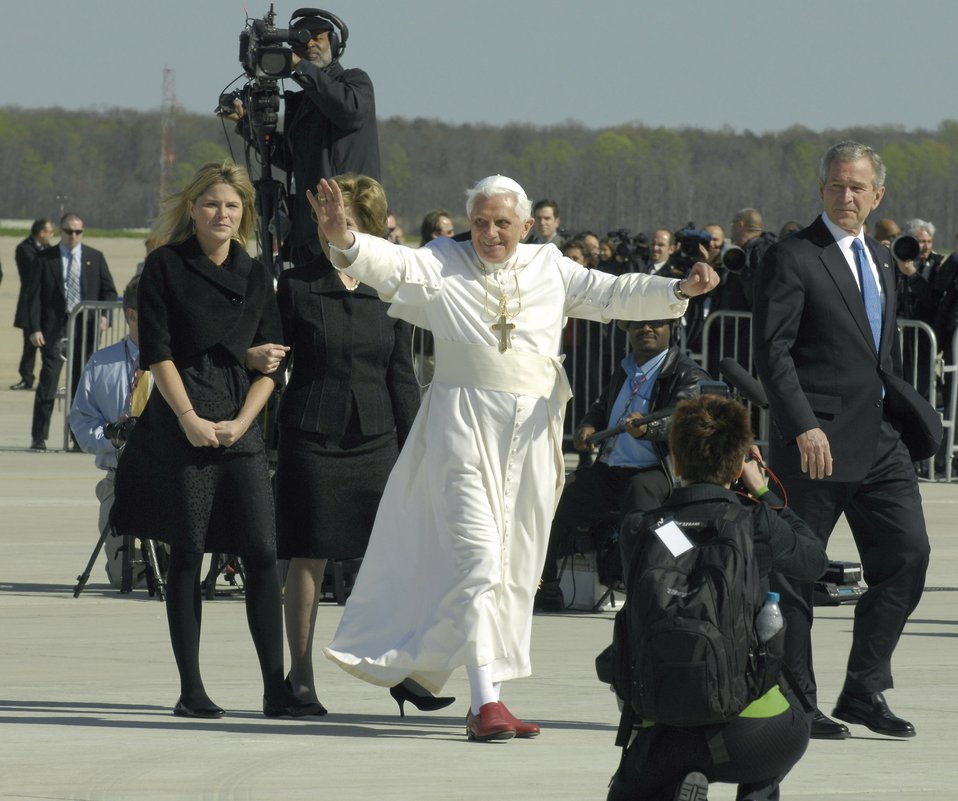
Pope arrives at Andrews

Pope Benedict XVI waves to the crowd upon his arrival as he is escorted by President George W. Bush and his family April 15 at Andrews Air Force Base, Md. The pope is visiting the United States for a week and will meet with President Bush at the White House, address the presidents of Roman Catholic colleges and universities, and celebrate Mass at Nationals Park in Washington, D.C., and Yankee Stadium in New York City. The pontiff was selected as the 265th pope on April 19, 2005.